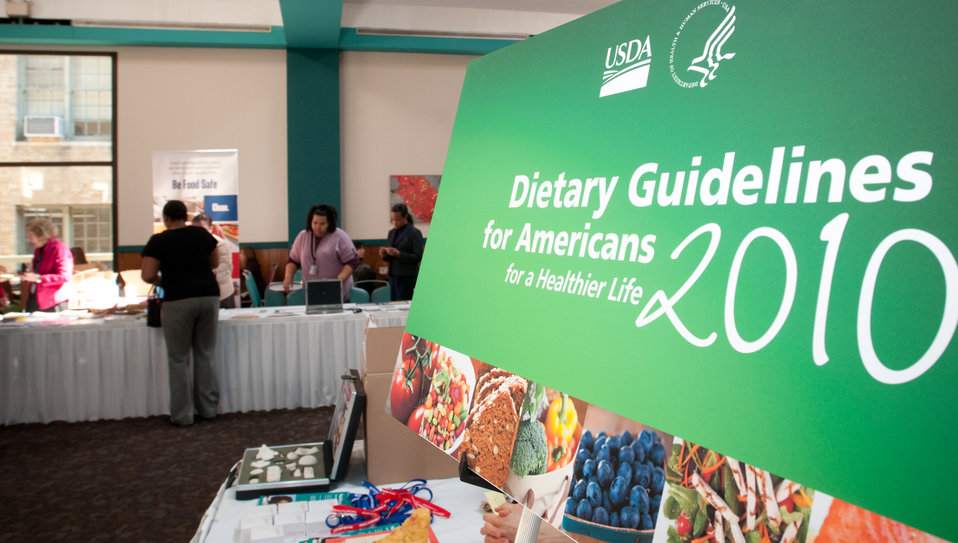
The Department of Agriculture celebrated the introduction of the Dietary Guidelines for Americans 2010 with an information event in the Whitten Café in Washington, D.C., on Wednesday, Mach2, 2011. This first Wednesday event of March, had representatives from Agricultural Marketing Service (AMS); Agricultural Research Service (ARS - including Food and Nutrition Information Center - FNIC, and Food Safety Information Center – FSIC); Economic Research Service (ERS); Food, Nutrition & Consumer Services (FNCS); Food Safety and Inspection Service (FSIS); National Institute of Food and Agriculture (NIFA); USDA Office of Operations (Departmental Management); Food and Drug Administration (FDA); and Sodexo.